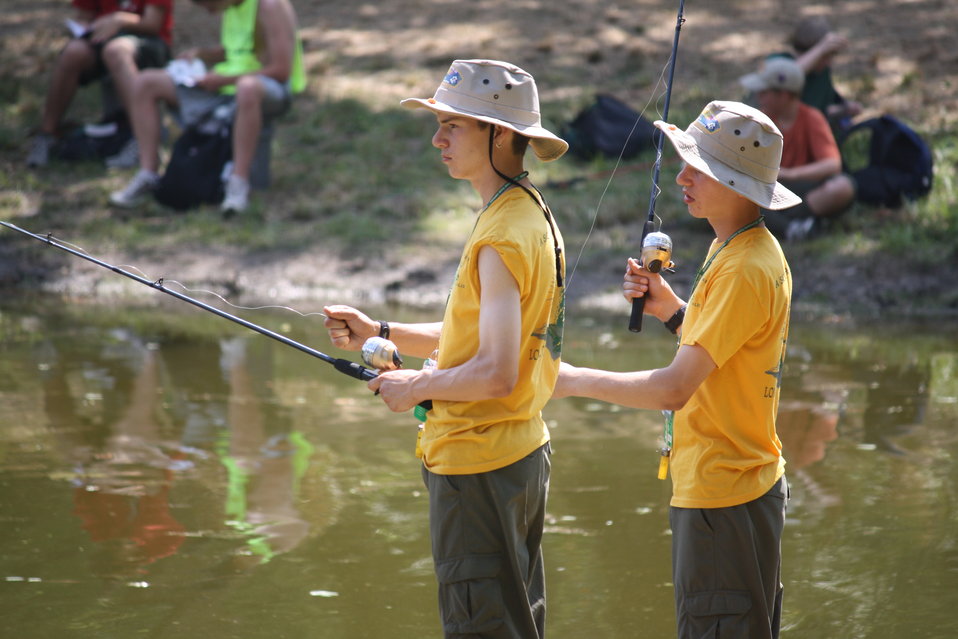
Boy Scout Jamboree 2010